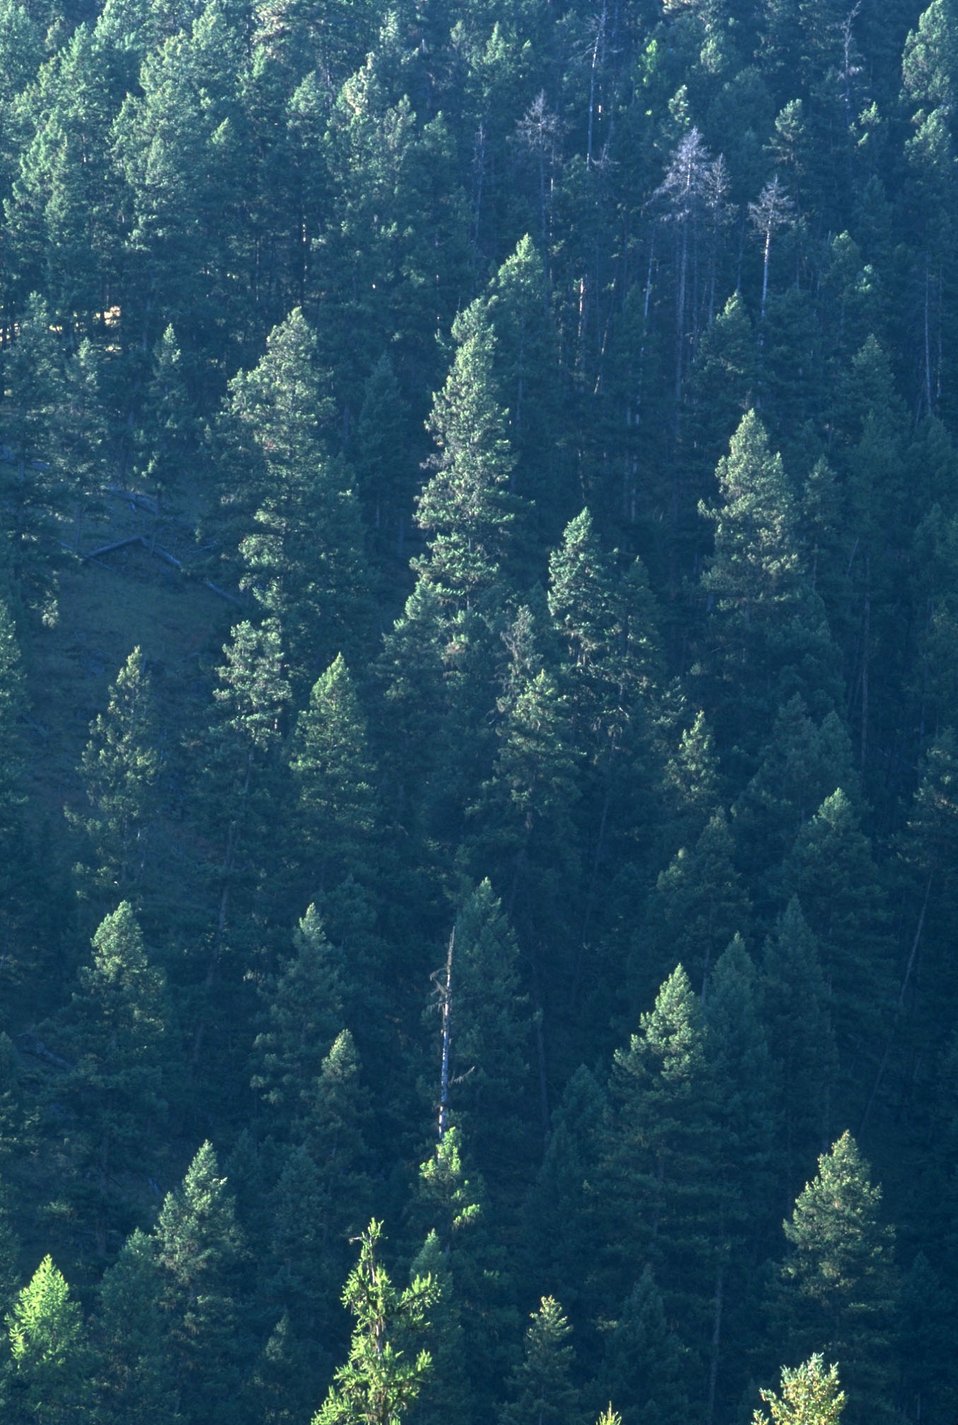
Timber stand along the Blackfoot River VERTICAL